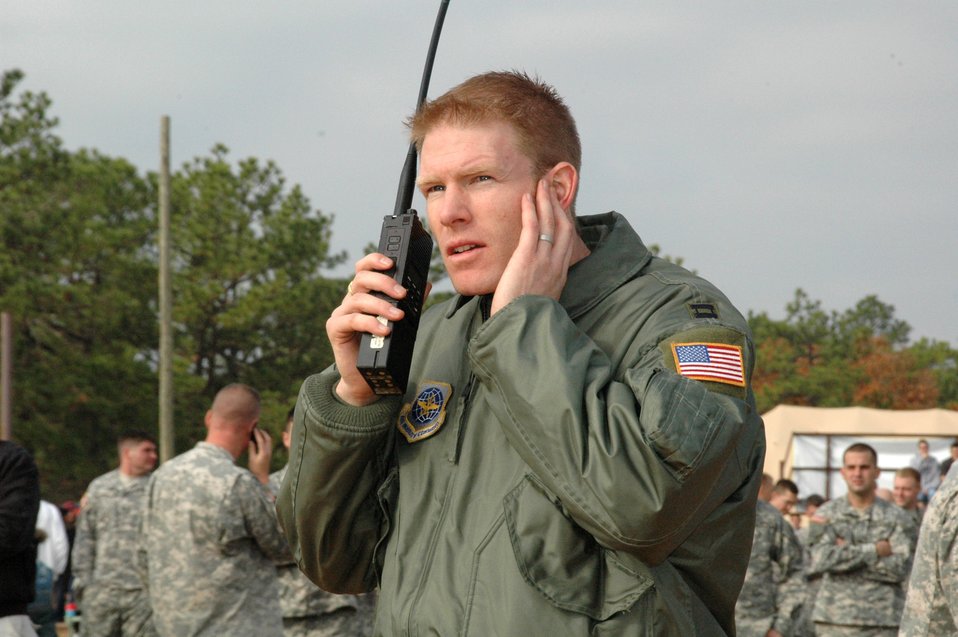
Operation Toy Drop brings international, U.S. military together

Capt. Adam Shockley listens on the ground as paratroopers land during Operation Toy Drop held Dec. 8 at the Sicily Drop Zone at Fort Bragg, N.C. The Air Force Reserve Command's 440th Airlift Wing based at Pope Air Force Base, N.C., supported the combined joint exercise with C-130 Hercules airlift. More than 1,050 paratroopers jumped during the exercise. Captain Shockley is a navigator with the 43rd Airlift Wing at Fort Bragg.